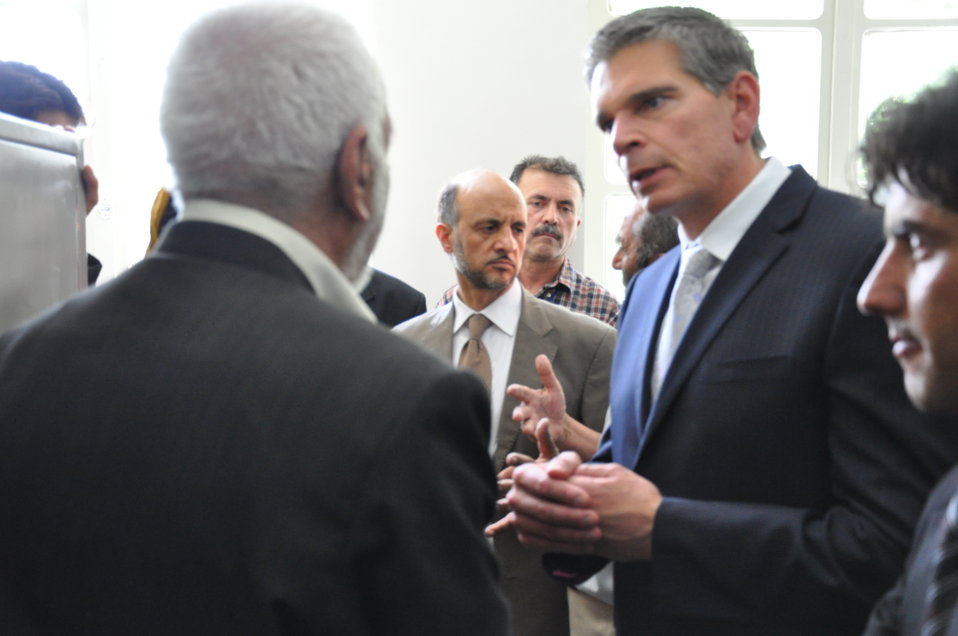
Kabul University Herbarium